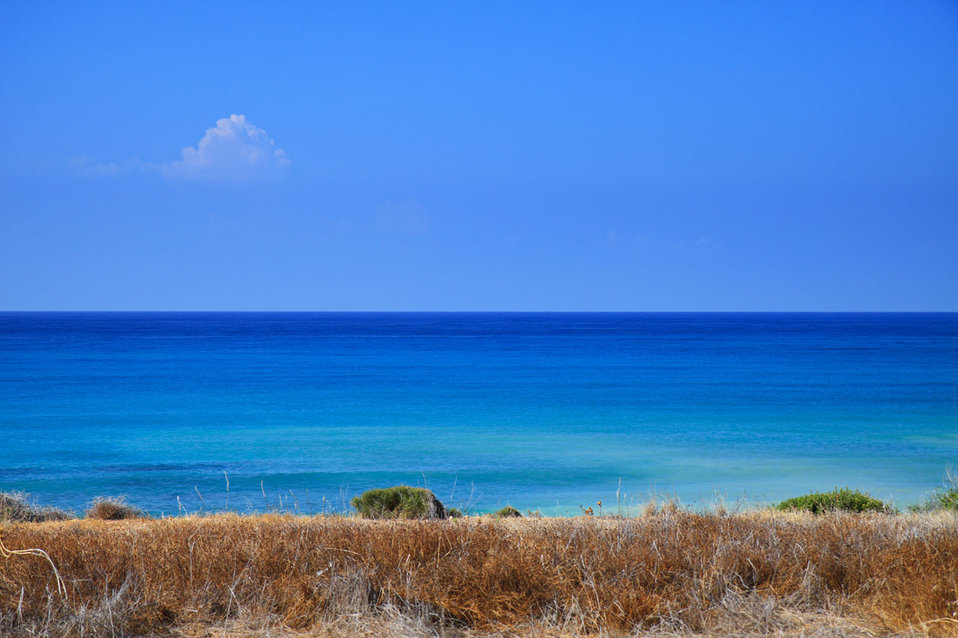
Turquoise sea and blue sky with some dry grass in the foreground.